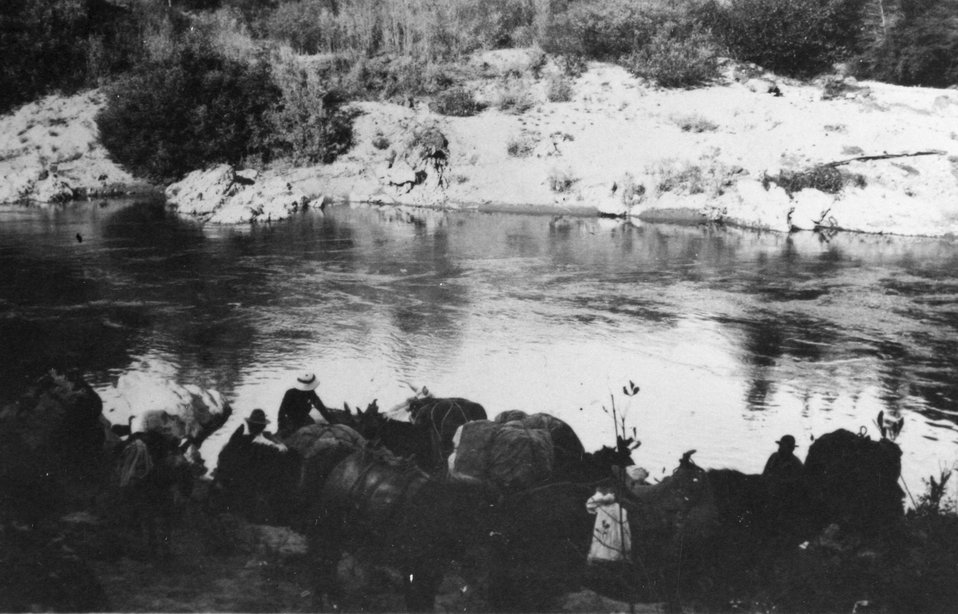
Swimming Pack animals across the Rogue River.